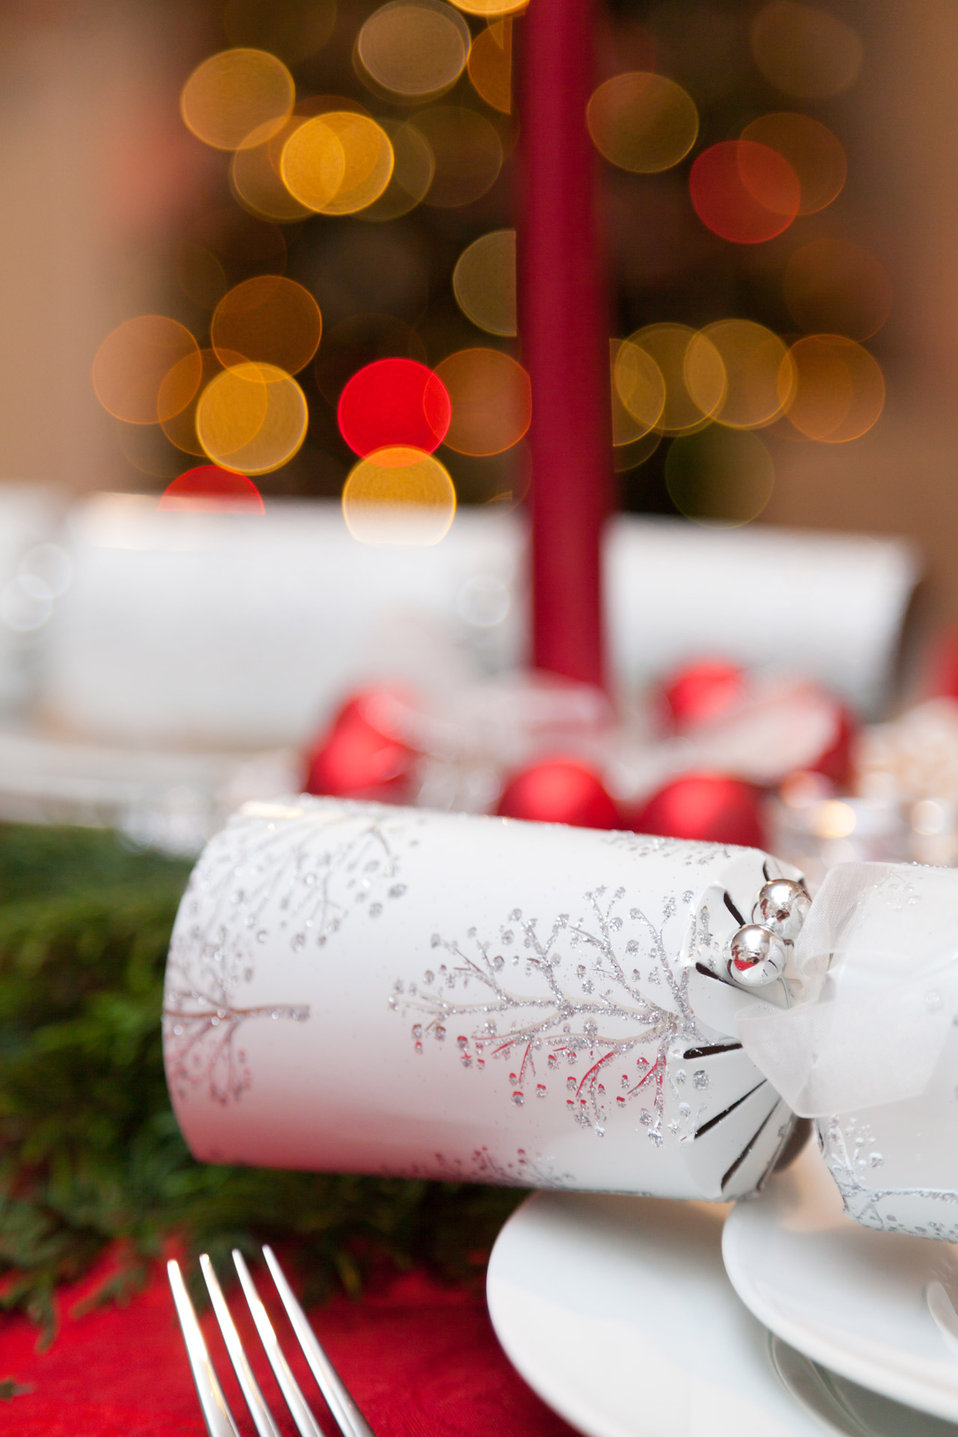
Christmas cracker decoration

Christmas cracker on a table with blurred lights in the background.